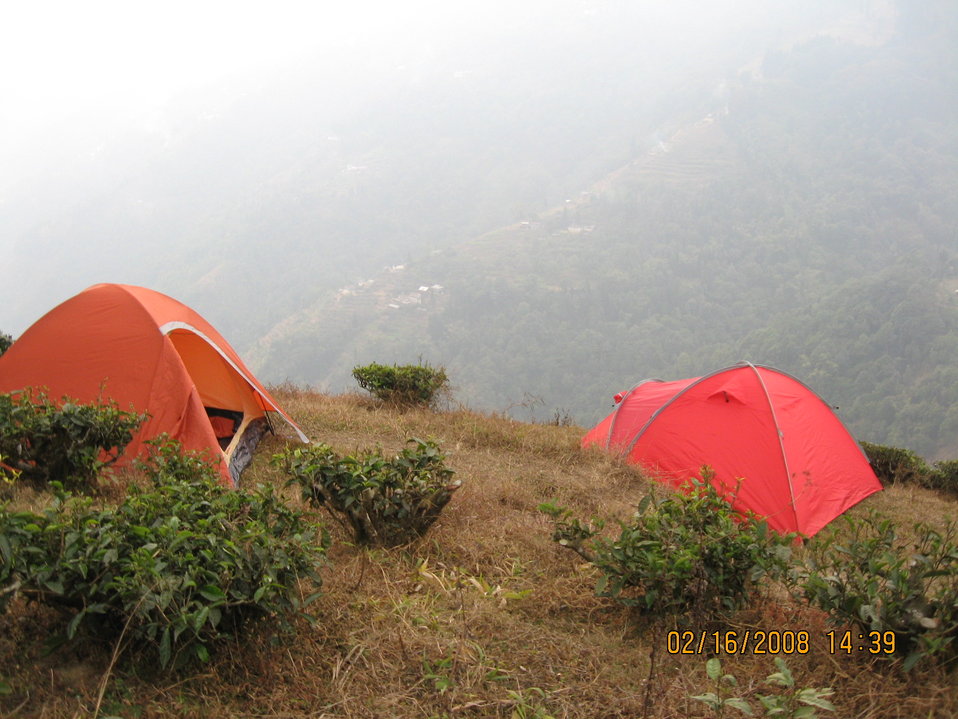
Poobong Camp